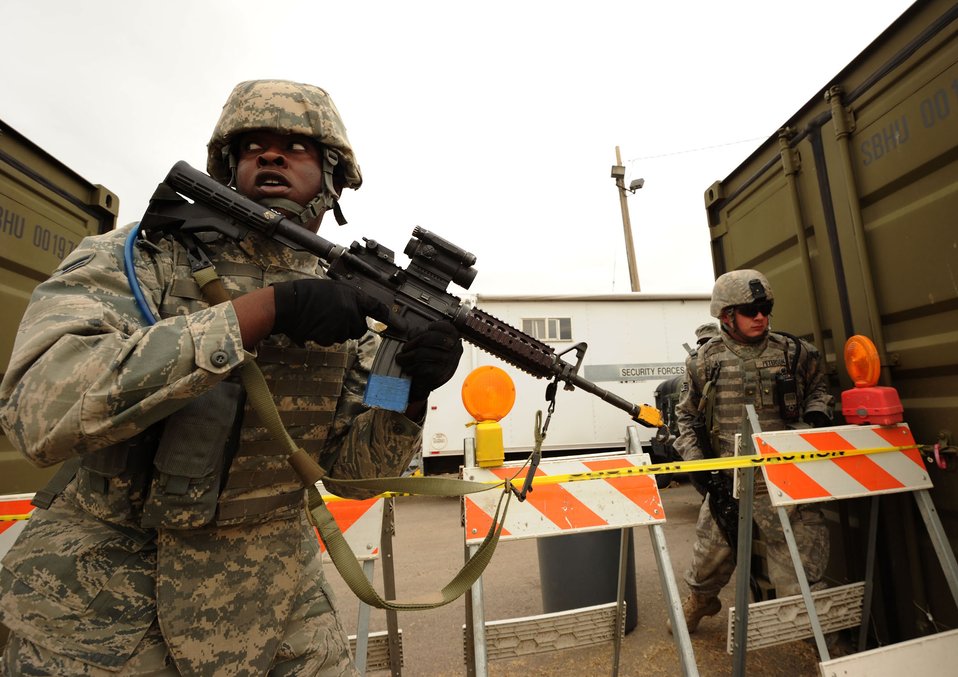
Security Forces Airmen take part in combat skills training

Airman 1st Class Alfred Delaney runs for cover during a 7-day combat skills training course August 27 at Hill Air Force Base, Utah. Airman Delaney is a security forces member with the 75th Security Forces Squadron.